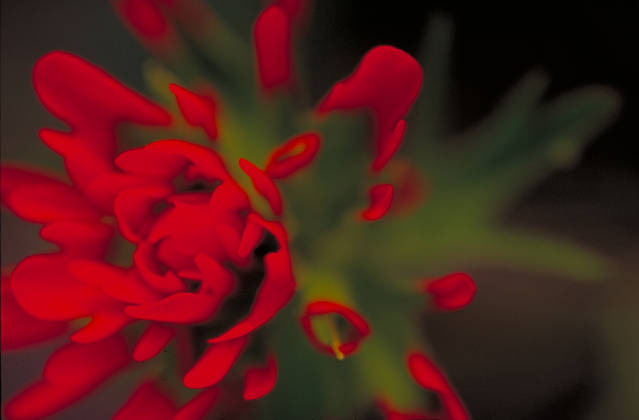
Indian paintbrush